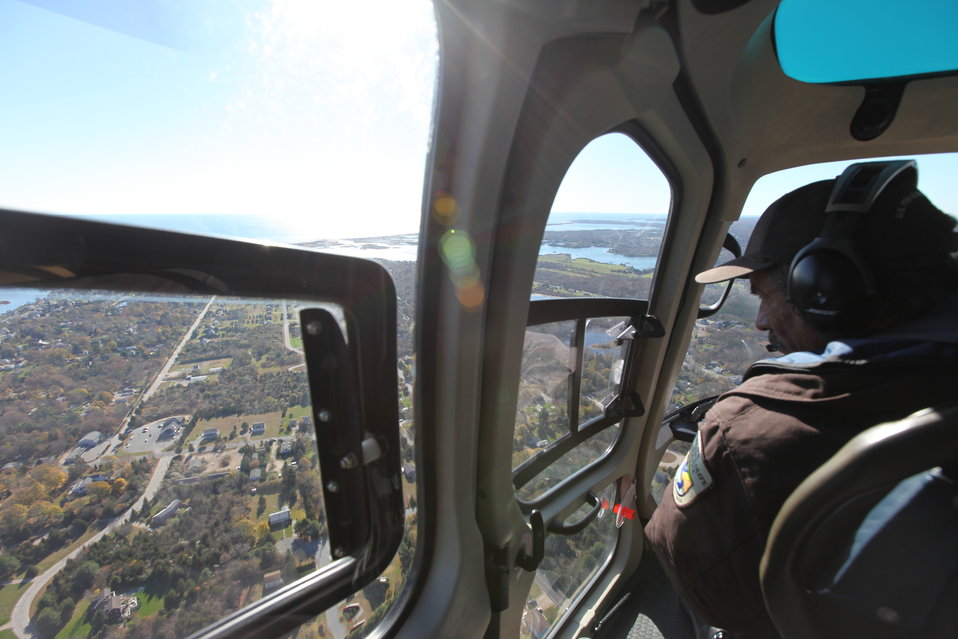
Charlie Vandemeer

Refuge Manager Charlie Vandemeer surveys damage to Rhode Island National Wildlife Refuges in the aftermath of Hurricane Sandy from a helicopter.